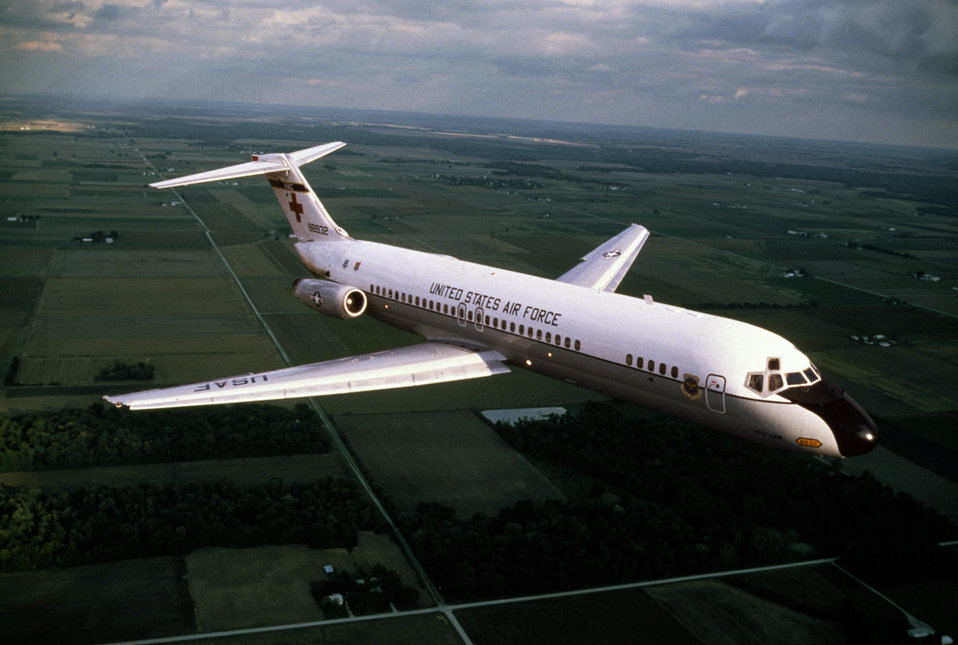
C-9 Nightingale

1960s -- The C-9 Nightingale flies a mission August 1968.